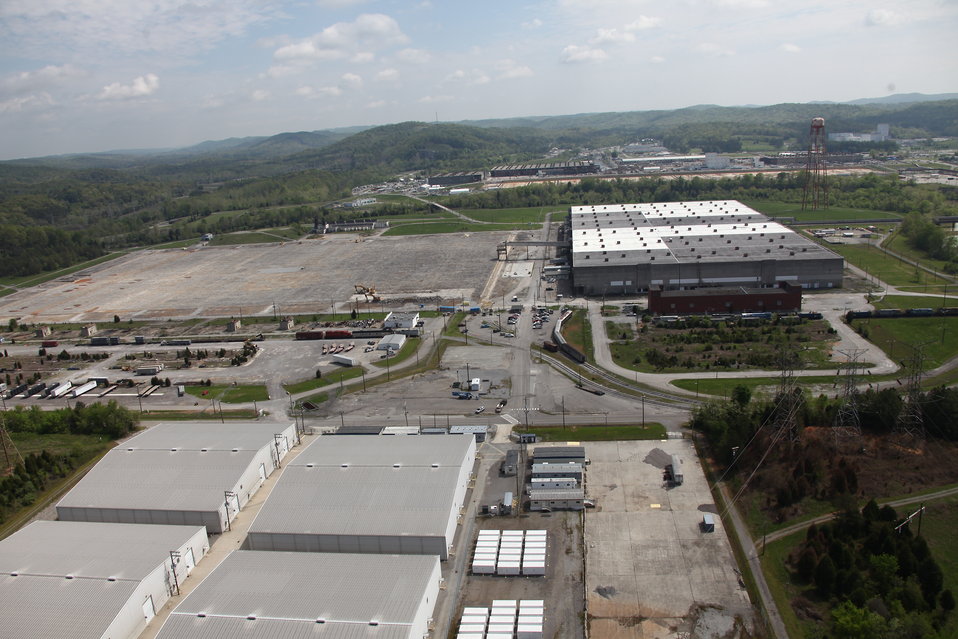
ETTP